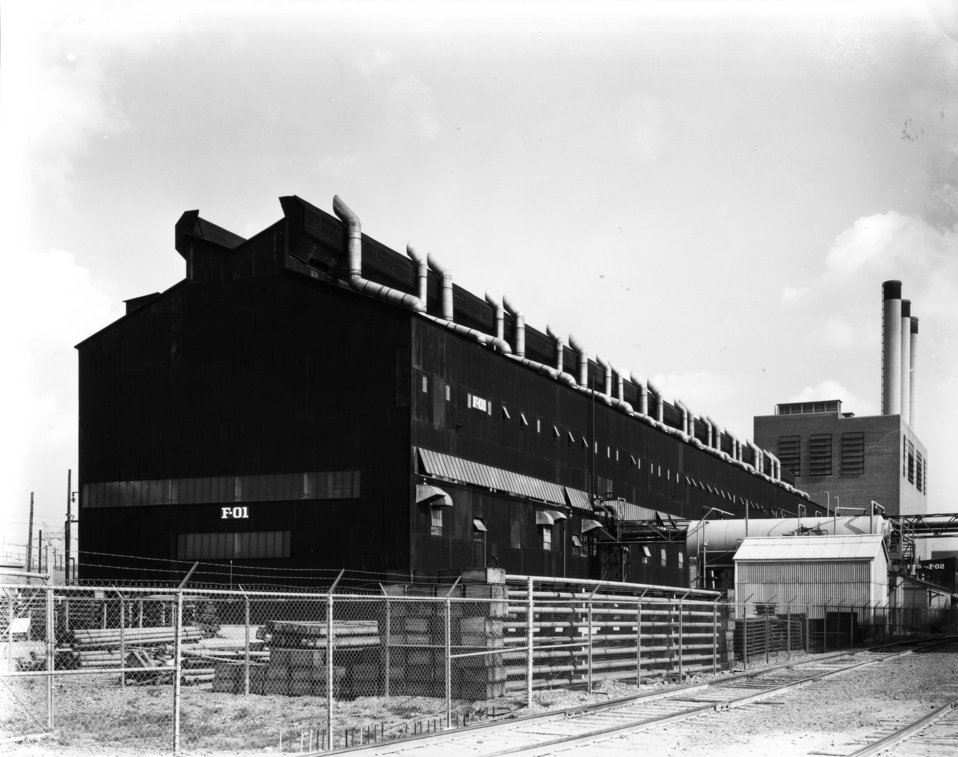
Schools at Oak Ridge